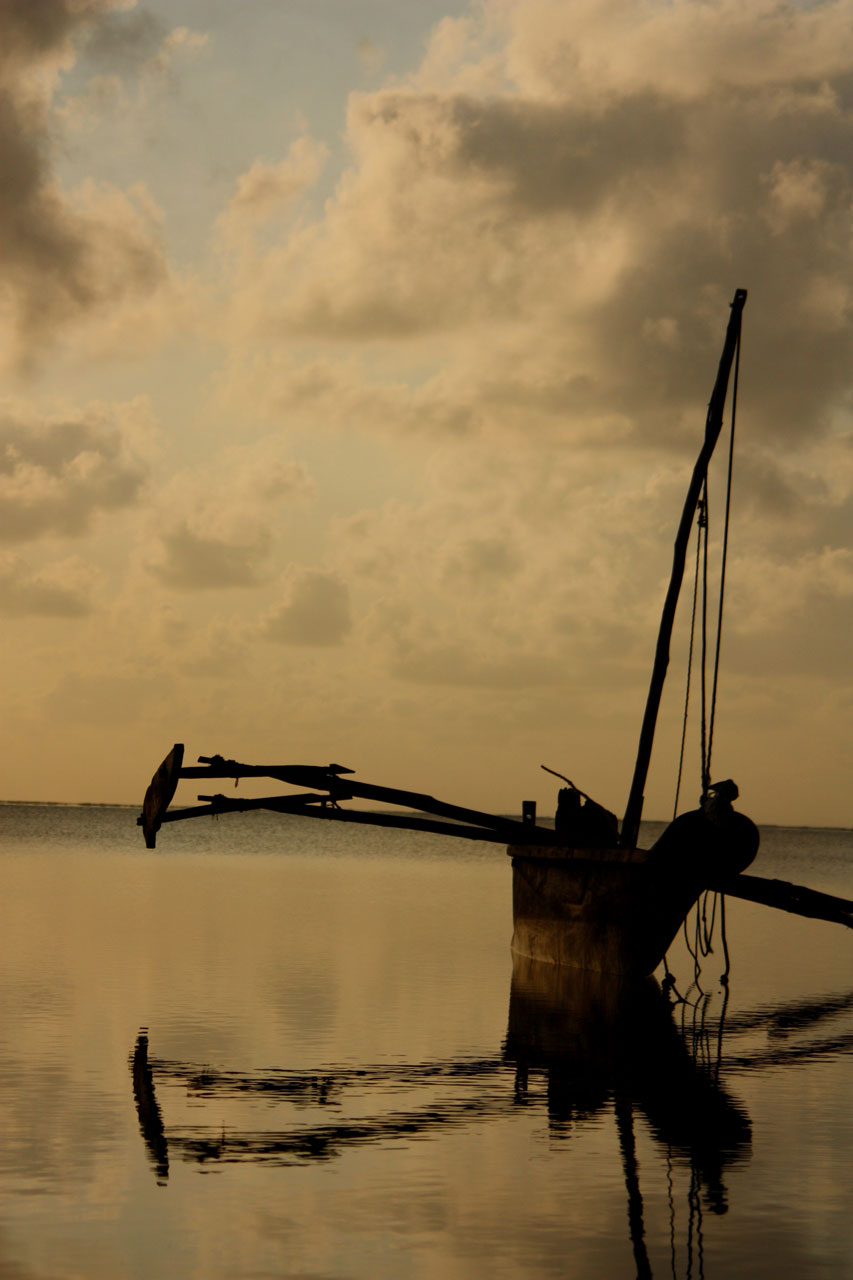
Boat in the sea.